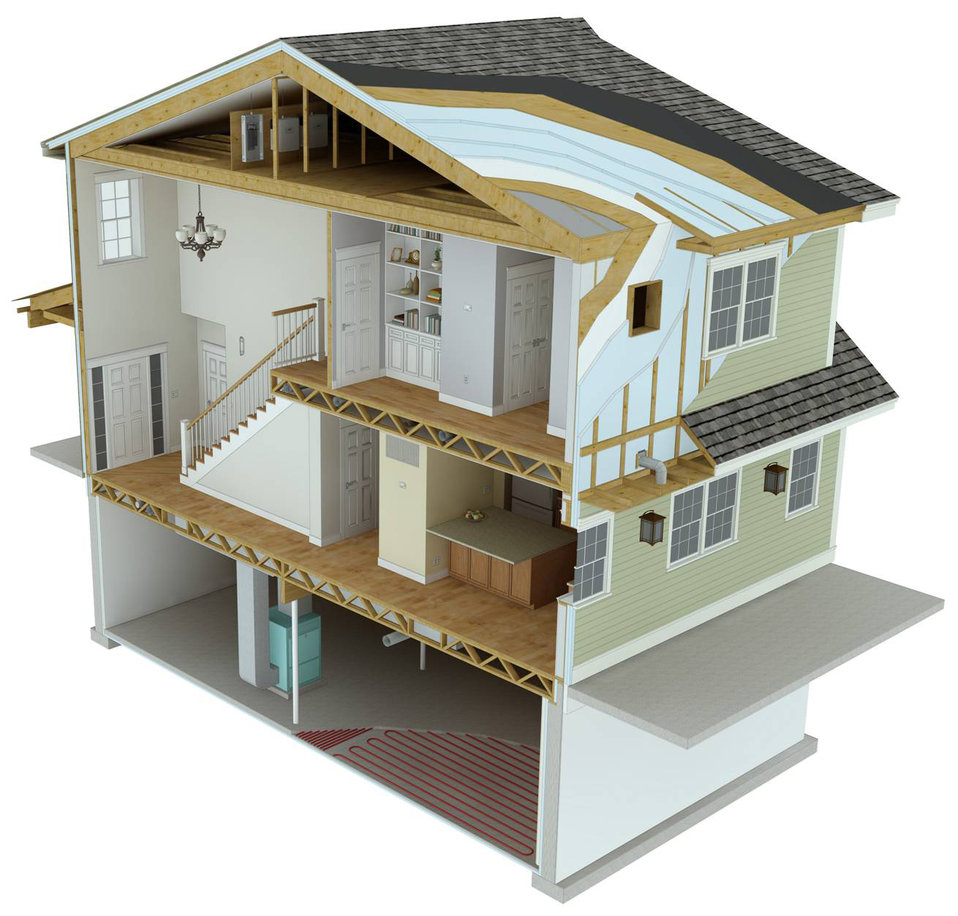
Net-Zero House

Net-Zero Energy house: Building Science Corporation.